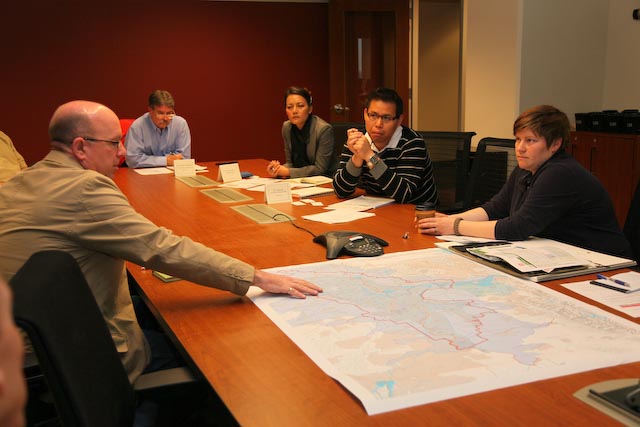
Corps discusses watershed approach with Thai Delegation

U.S. Army Corps of Engineers Sacramento District’s Brandon Muncy (left), chief of Civil Works, explains some of the history behind the delta islands including Frank’s Tract, which was flooded and abandoned, leaving a lake-like feature in the delta’s maze of water ways, and is now a popular spot for fishing. The Sacramento District hosted two delegates from Thailand, March 30, 2012, explaining on-going projects in the Sacramento-San Joaquin Delta and on the American River; and demonstrating how the Corps, along with its partners, is addressing flood risk challenges through a watershed approach.